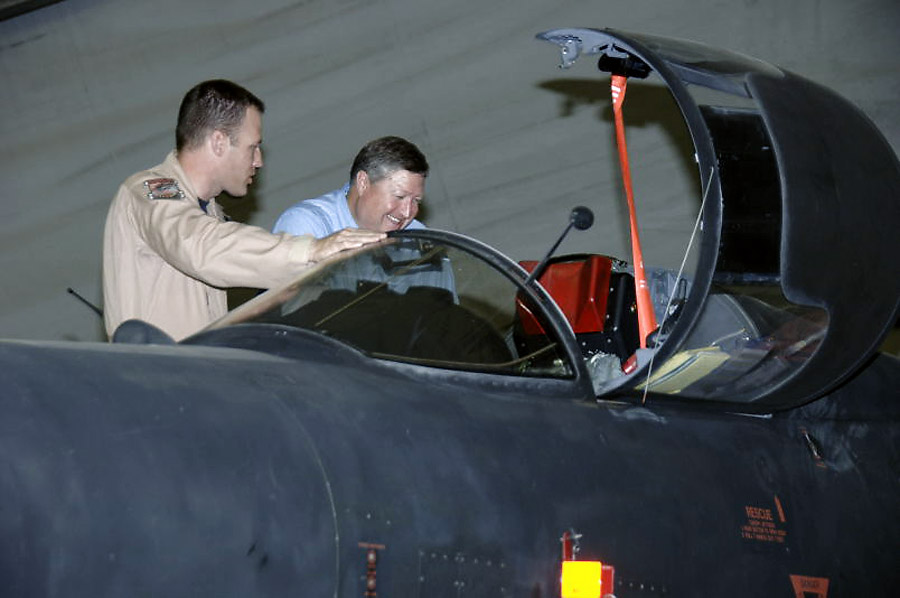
Air Force secretary tours Southwest Asia

Lt. Col. Vincent Catich shows Secretary of the Air Force Michael Donley the cockpit of a U-2 Dragonlady during the secretary's visit to the 380th Air Expeditionary Wing Oct. 12 at an air base in Southwest Asia . The secretary visited the wing to gain a better understanding of the infrastructure and capabilities of one the smallest but most diverse bases in the Air Forces Central area of responsibility.